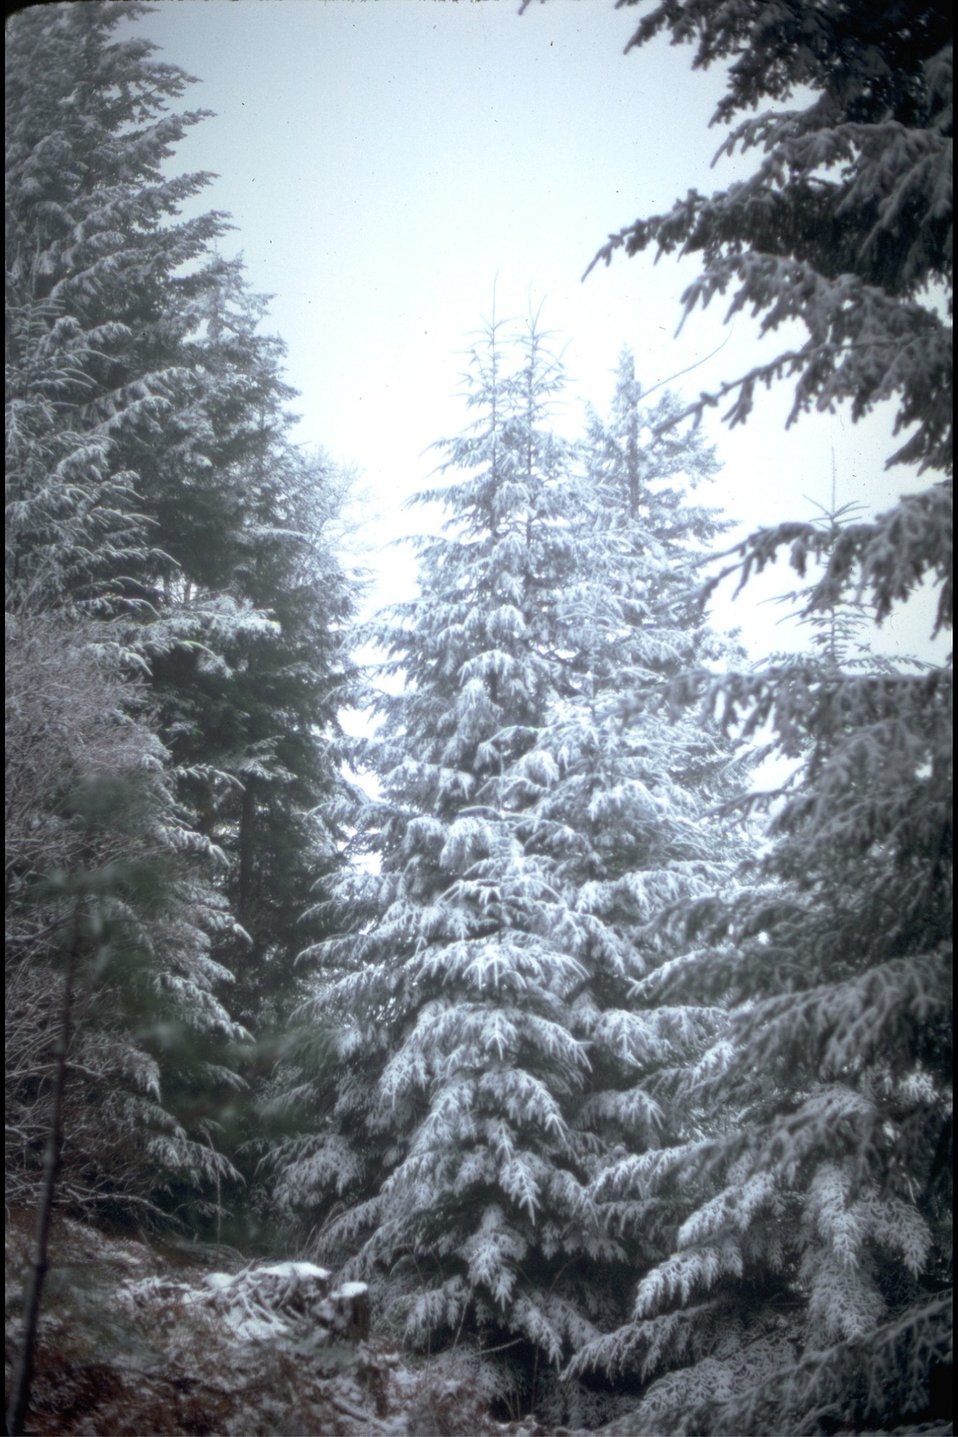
Wild Rogue River Shuttle Route, snow on Bald Ridge.